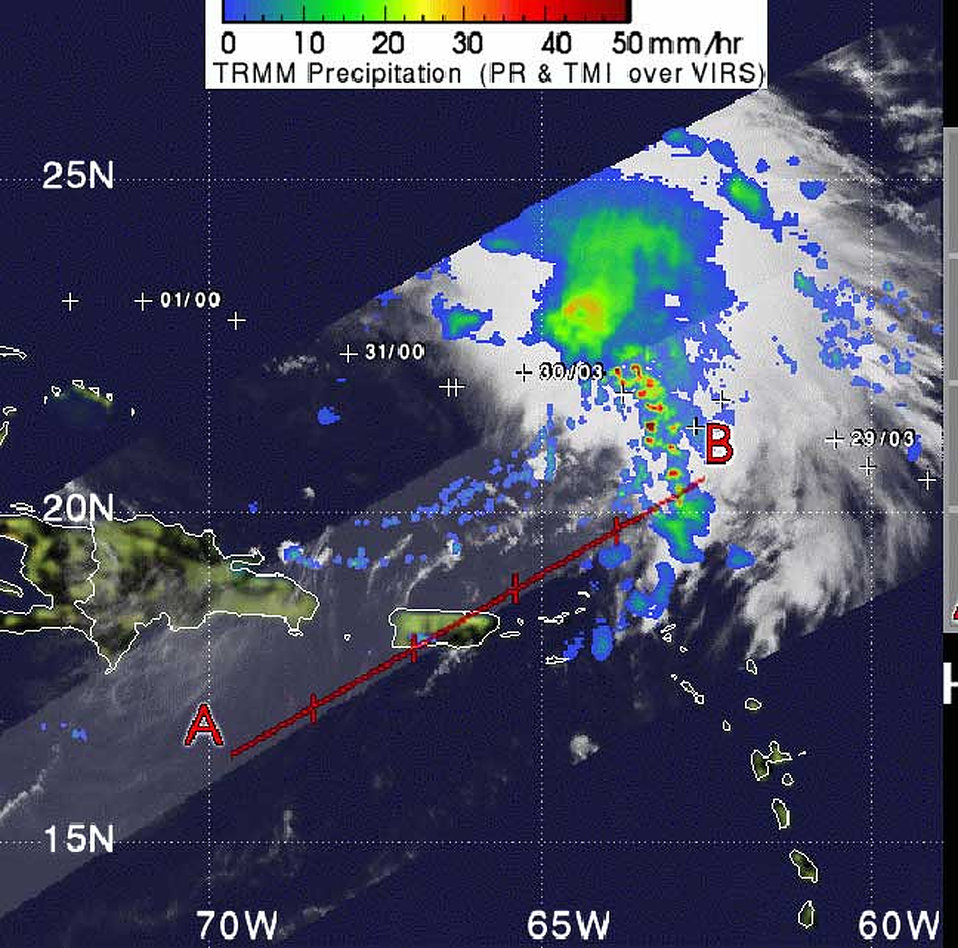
August 31, 2008Tropical Storm Hanna Appears to Again Threaten U.S. East Coast: